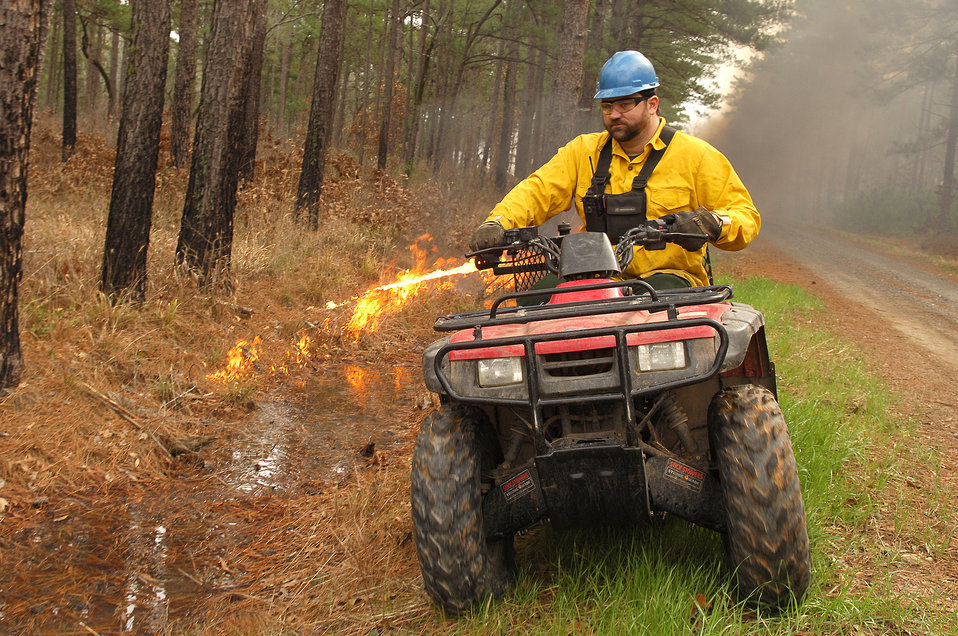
Controlled burn

BARKSDALE AFB, La. (AFPN) -- Mark Gates performs a perimeter burn using a terra torch mounted to the rear of an all-terrain vehicle. The 200-acre burn Jan. 26 was a timber stand improvement burn, and is one of 10 scheduled controlled burns on Barksdale's East Reservation this year. The burning is conducted to reduce overall fire fuel on the ground, which in turn helps prevent forest fires. Mr. Gates is the base biologist here.